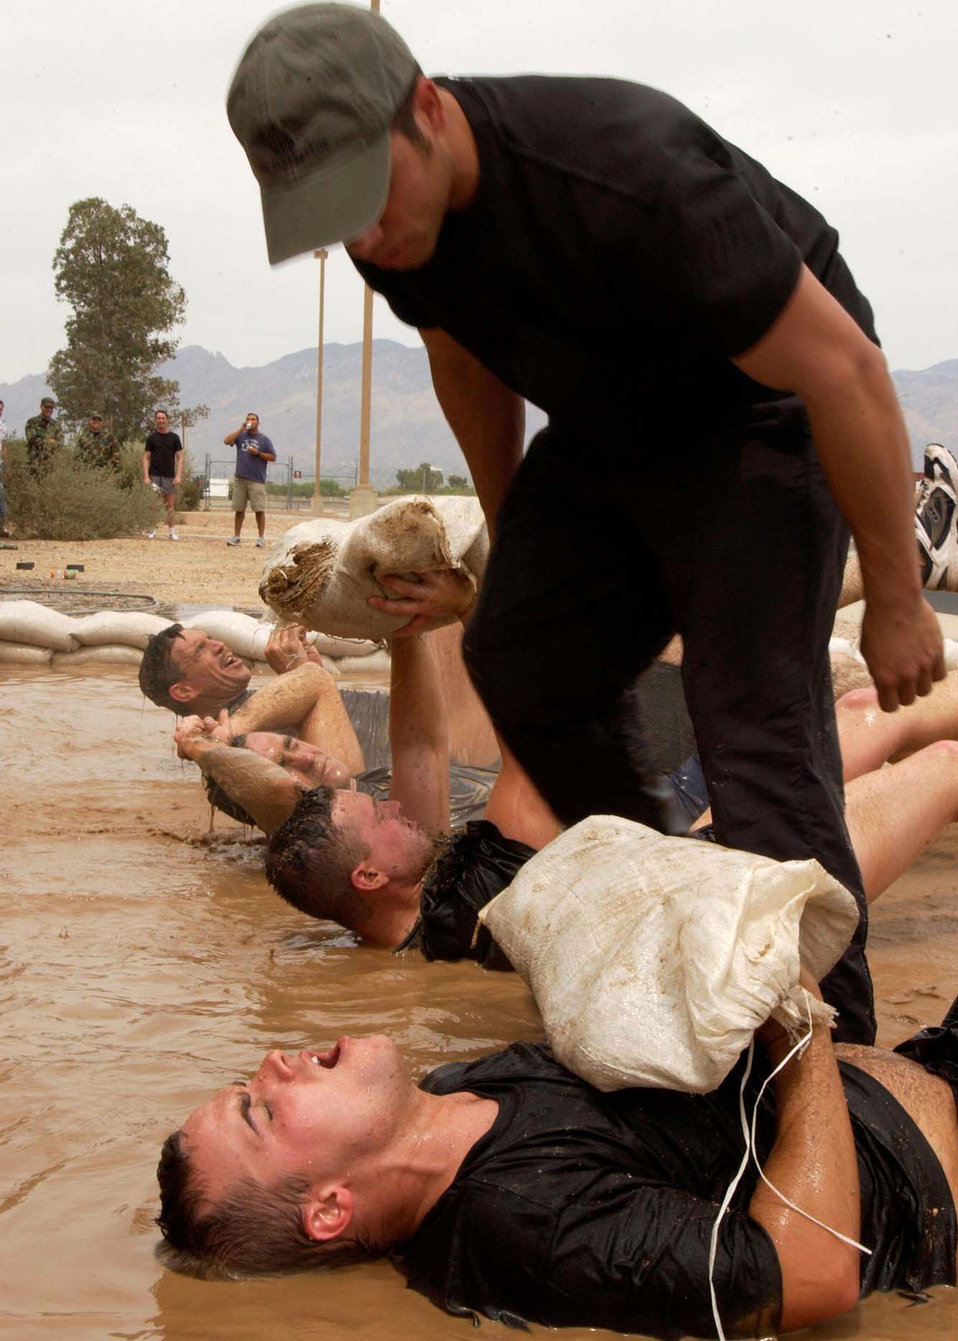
PJ selection process

Tech. Sgt. Isaiah Staley monitors an applicant during the 306th Rescue Squadron pararescue screening Friday, April 21, 2006, at Davis-Monthan Air Force Base, Ariz. Applicants must pass a timed 3-mile run, 1,500 meter swim, calisthenics and other tasks before proceeding to the 10-week indoctrination course at Lackland AFB, Texas. Sergeant Staley is a pararescueman with the 306th.